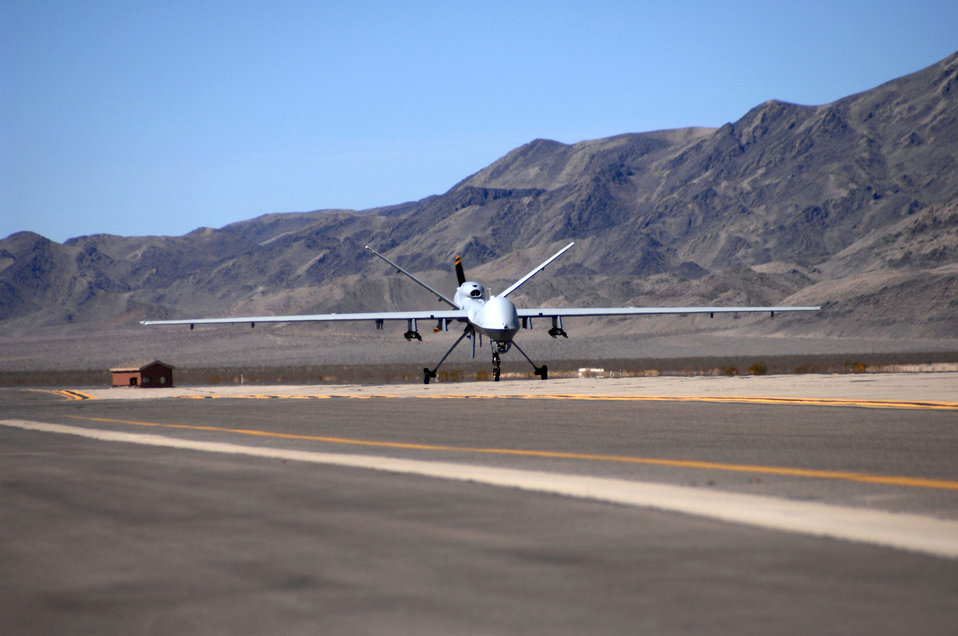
First MQ-9 Reaper makes its home on Nevada flightline

An MQ-9 Reaper Unmanned Aerial Vehicle taxis into Creech Air Force Base, Nev., March 13. It is the first operational airframe of its kind to land here. This Reaper is the first of many to be assigned to the 42nd Attack Squadron.